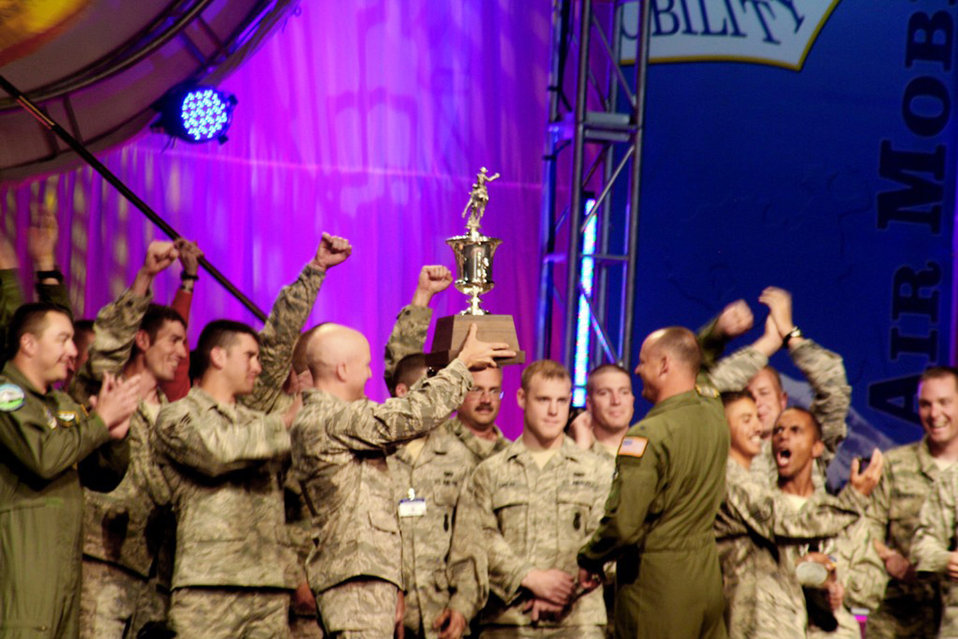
Winners announced for Rodeo 2009 competitions

Members of the 62nd Airlift Wing from McChord Air Force Base, Wash., hold up the trophy for winning Best Air Mobility Team for Air Mobility Rodeo 2009 July 24 at McChord AFB. The award is considered the